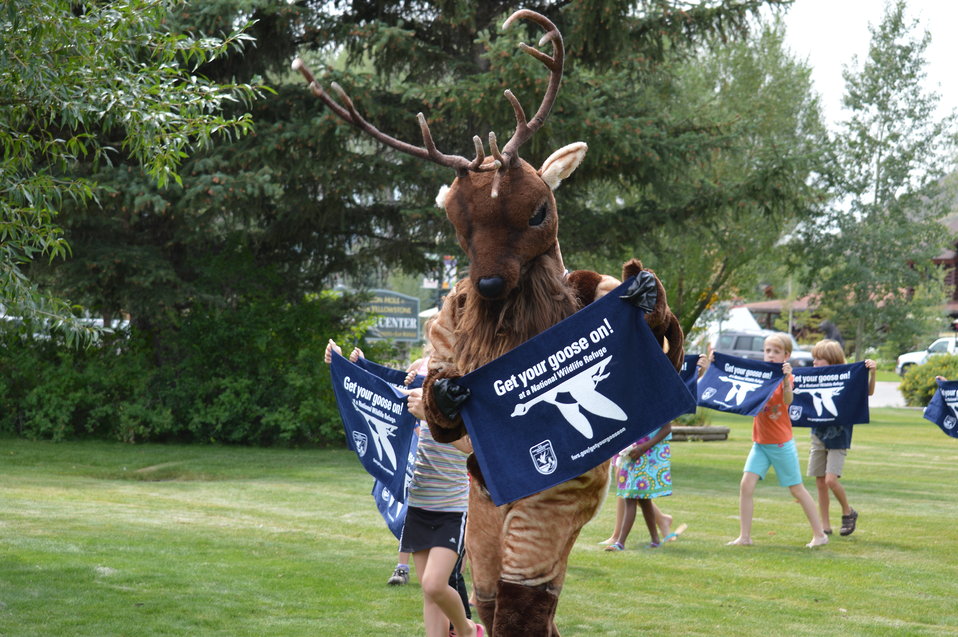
Get Your Goose On! - National Elk Refuge Style

On August 10, 2012 the U.S. Fish and Wildlife Service and Partners celebrated the 100 year anniversary of the establishment of the National Elk Refuge. In these photos, young attendees, along with Puddles the Blue Goose and the National Elk Refuge's mascot, showed us how to Get Your Goose On! with style.